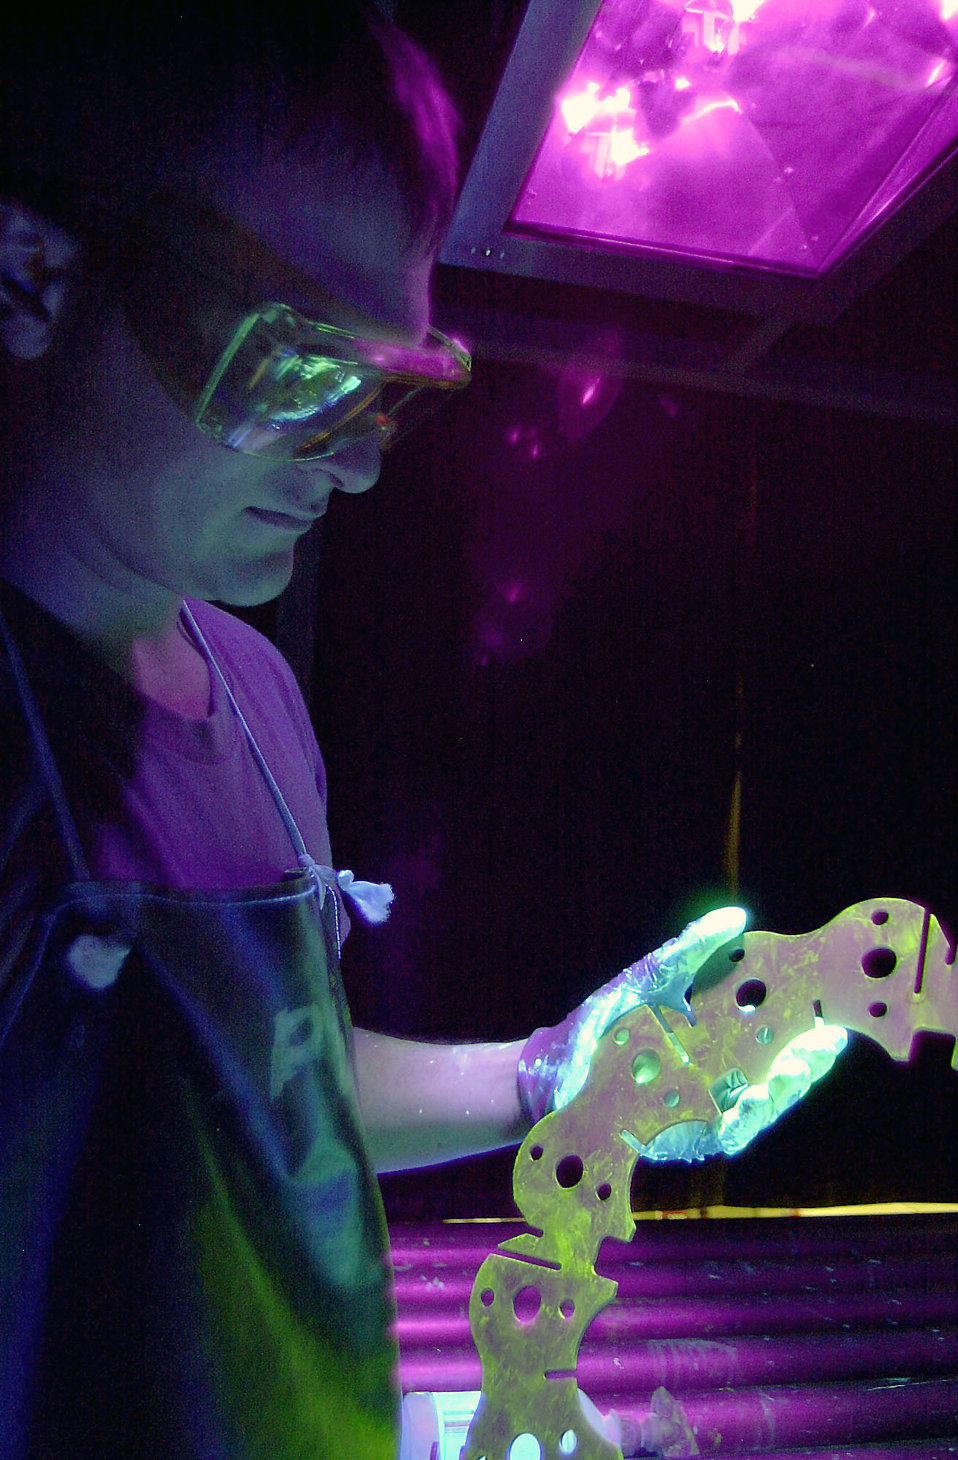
I see the light

ROYAL AIR FORCE MILDENHALL, UNITED KINGDOM -- Airman 1st Class Christopher Staley, 100th Maintenance Squadron, RAF Mildenhall, U.K., looks under a special light for a final inspection of a KC-135 part ensuring it's free of cracks. This light is the final stage, after soaking and washing the part in a liquid penetrating solution, to ensure the part is operational.